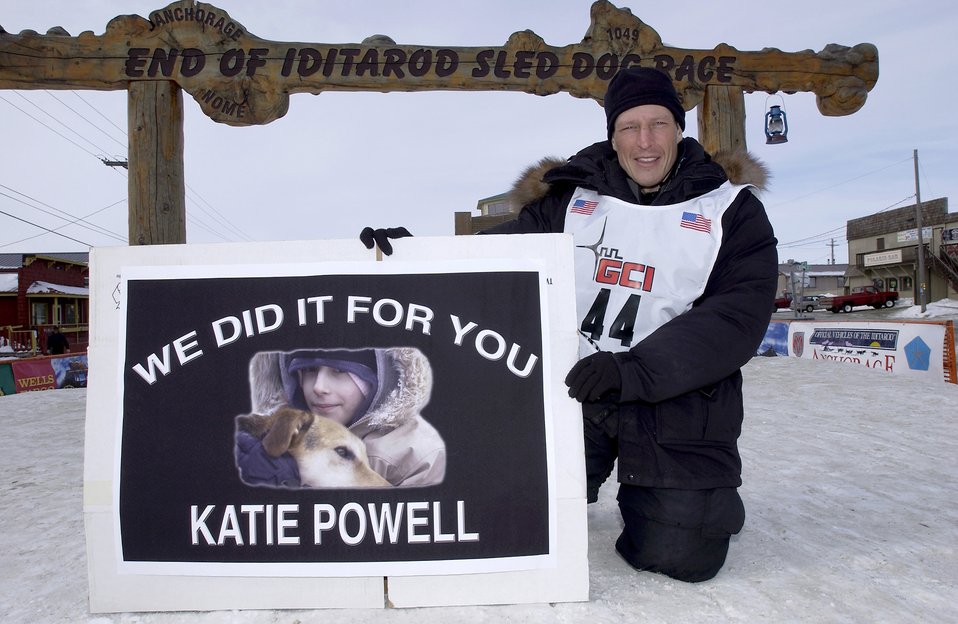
He did it for her

Maj. (Dr.) Thomas Knolmayer poses after finishing the 2006 Iditarod Sled Dog Race Friday, March 17, 2006, in Nome, Alaska. Katie Powell, the girl in the message, is the 10-year-old daughter of Senior Master Sgt. Chris Powell of Travis Air Force Base, Calif. She has Ewing's Sarcoma, a bone cancer.